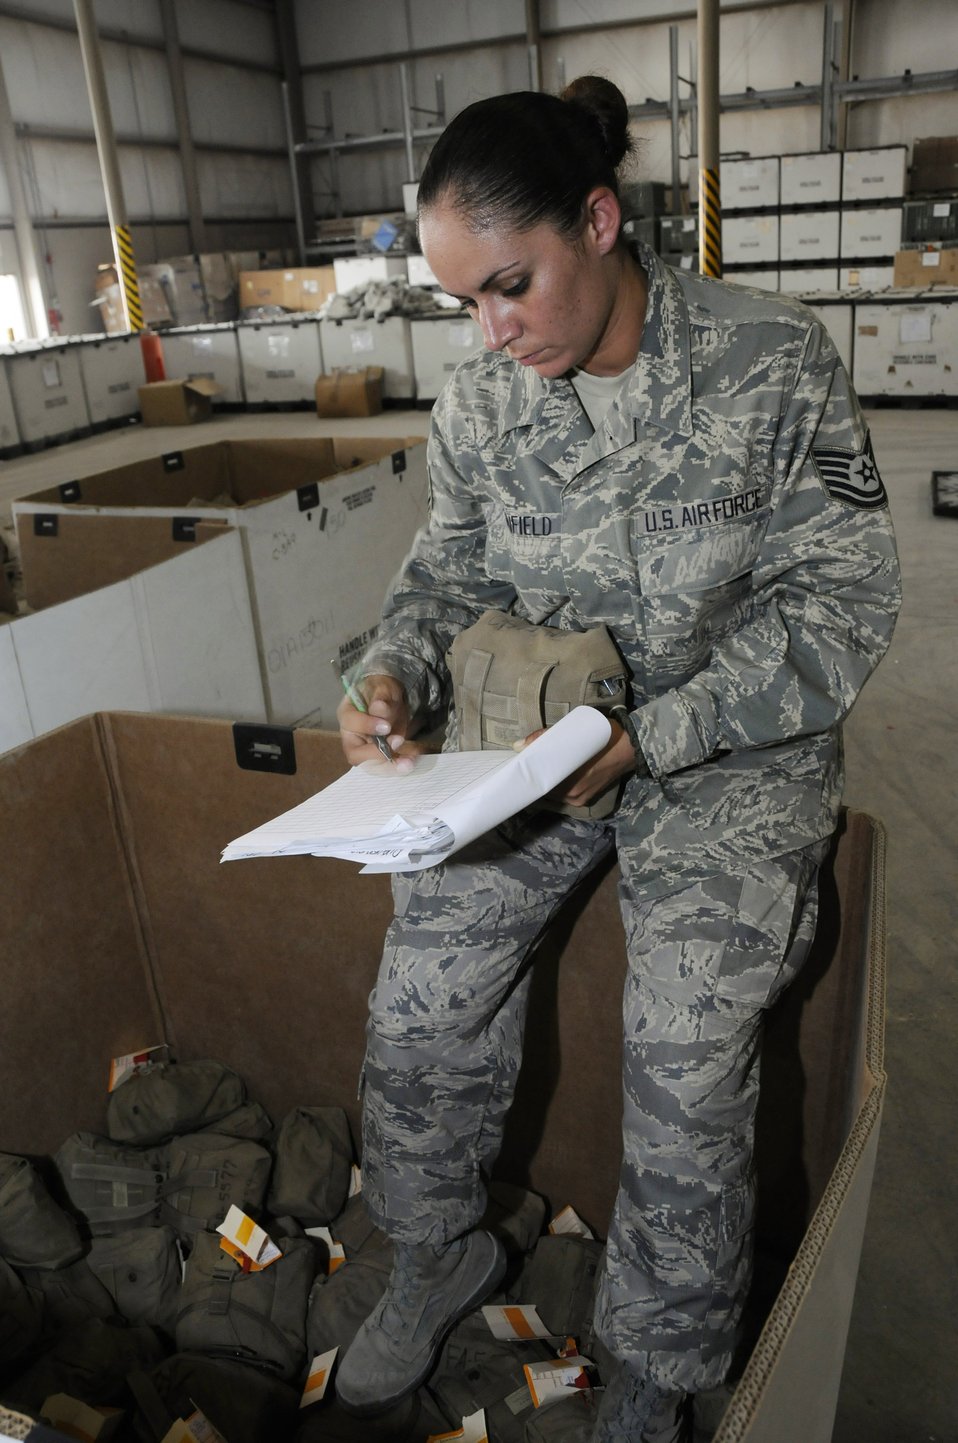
Small group takes small packages, makes huge impact

Tech. Sgt. Magdalena Winfield checks individual first aid kits lot numbers off her list Aug.19. Sergeant Winfield must verify the lot number of each IFAK against the DD form 1574. She must check individual items inside the kits to ensure they are not nearing their expiration dates. Once the process is complete, the kits are then re-circulated with troops in theater. Sergeant Winfield is assigned to the 379th Expeditionary Logistics Readiness Squadron, a native of San Antonio, and is deployed to Southwest Asia from Lackland Air Force Base, Texas.